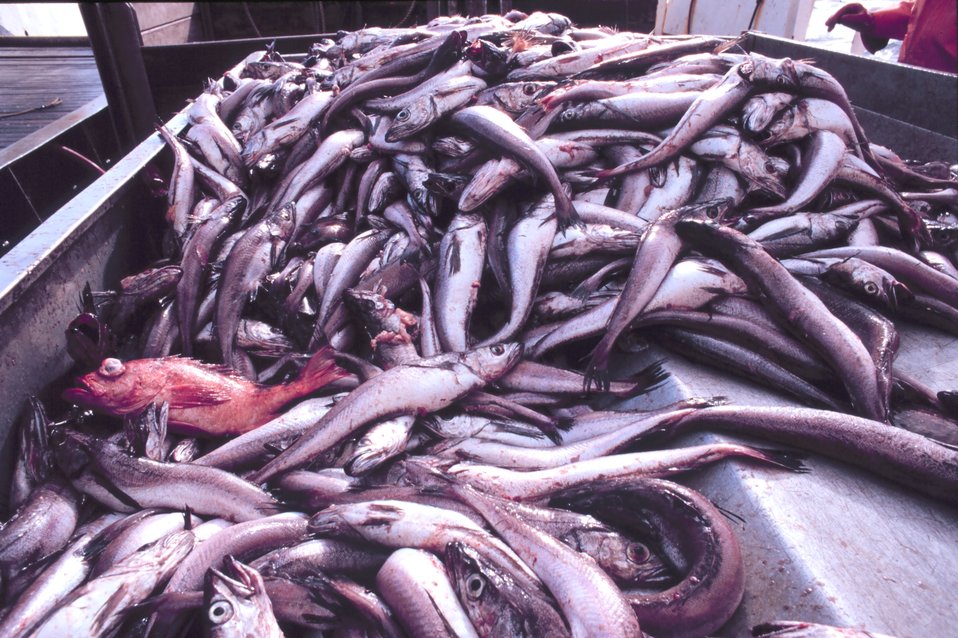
Fish on the checker, i.e., sorting table ready for measurement and weighing.